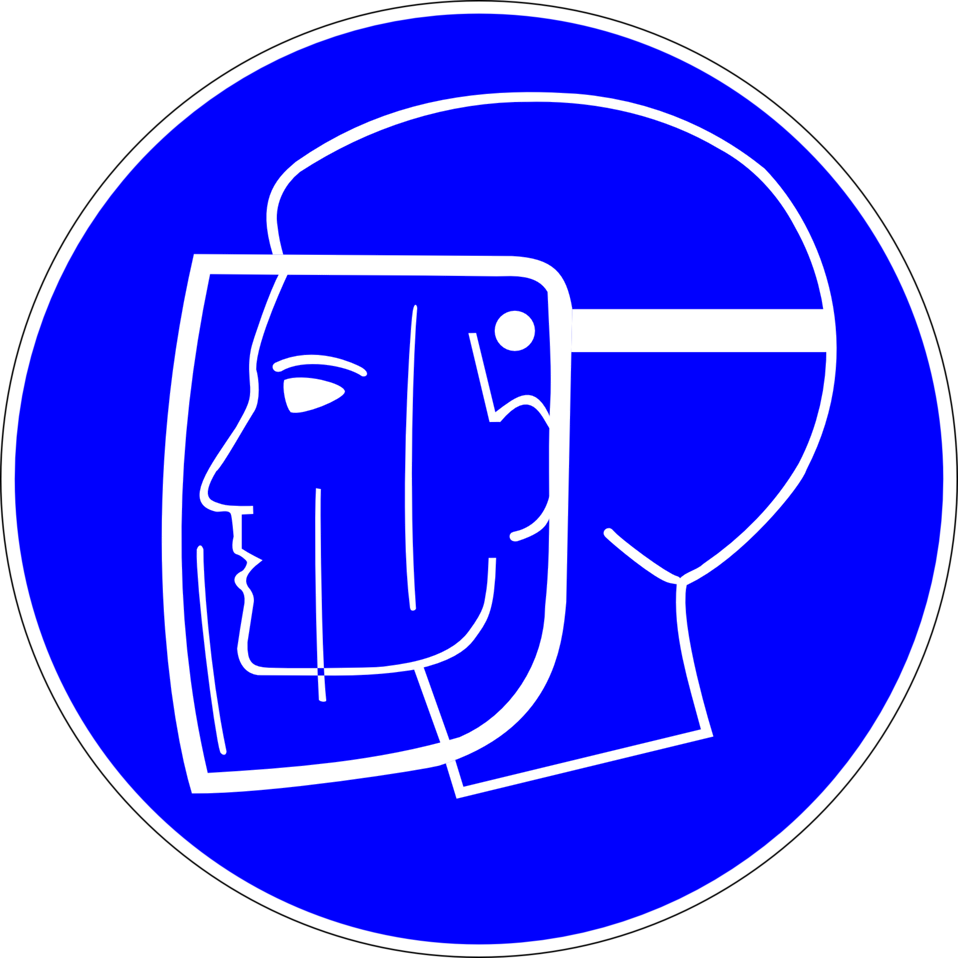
Deutsch: Gesichtsschutz benutzen, Gebotszeichen D-M008 nach DIN 4844-2